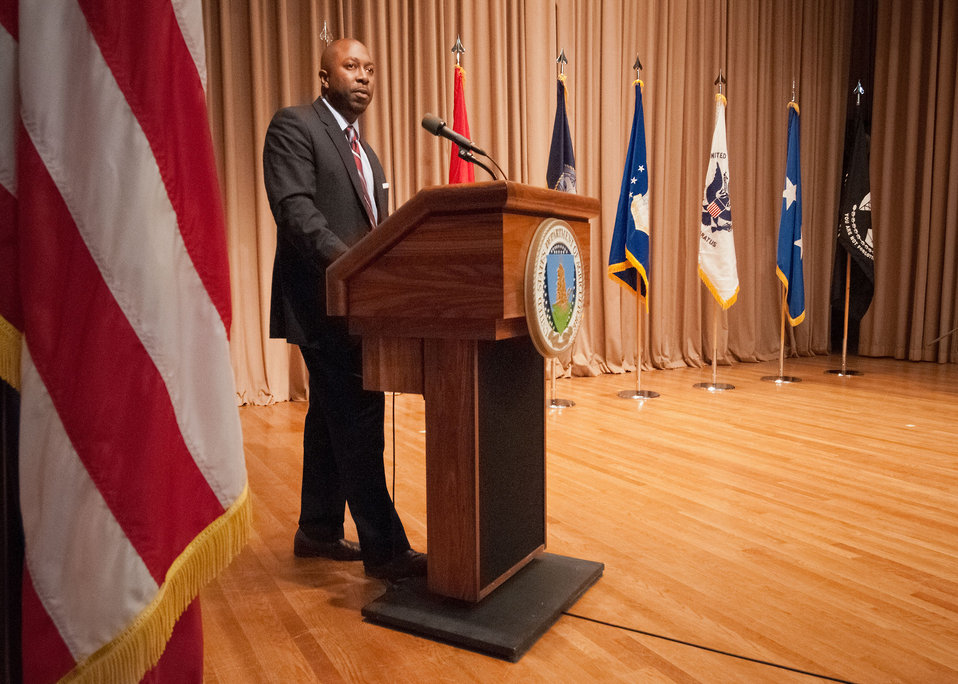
Agriculture Deputy Under Secretary, Farm and Foreign Agricultural Services(FFAS) and past member of the Marine Corps Reserve Karis Gutter introduces the keynote speaker U.S. Air Force Major General Commander, Air Force District of Washington, Joint Base Andrews, MD Sharon K.G. Dunbar at the U.S. Department of Agriculture Veterans Day Observance: Honoring All Who Served, in Washington, D.C. Wednesday, Nov. 7, 2012.